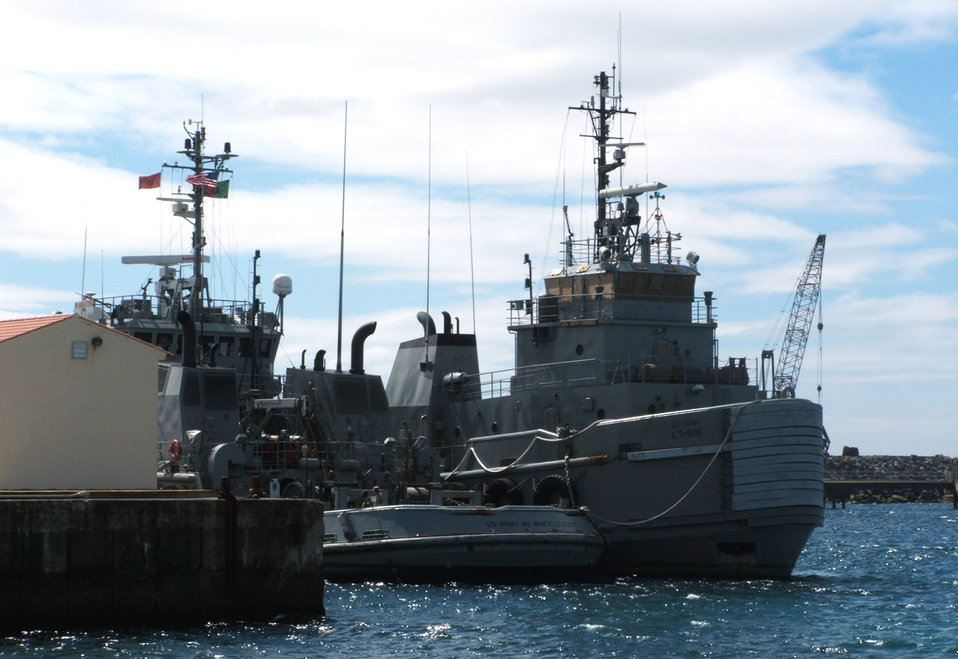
Lajes Airmen refuel U.S. Army tugboat

The U.S. Army tugboat Major General Winfield Scott leaves with its ship in tow, the Colonel Seth Warner, on Aug. 1 after being docked at the military port in Praia da Vitoria, Azores, since July 28. Airmen from the 65th Air Base Wing at Lajes Field provided re-supply and refueling support to the Army tugboat by converting an aircraft refueler to support a ship.